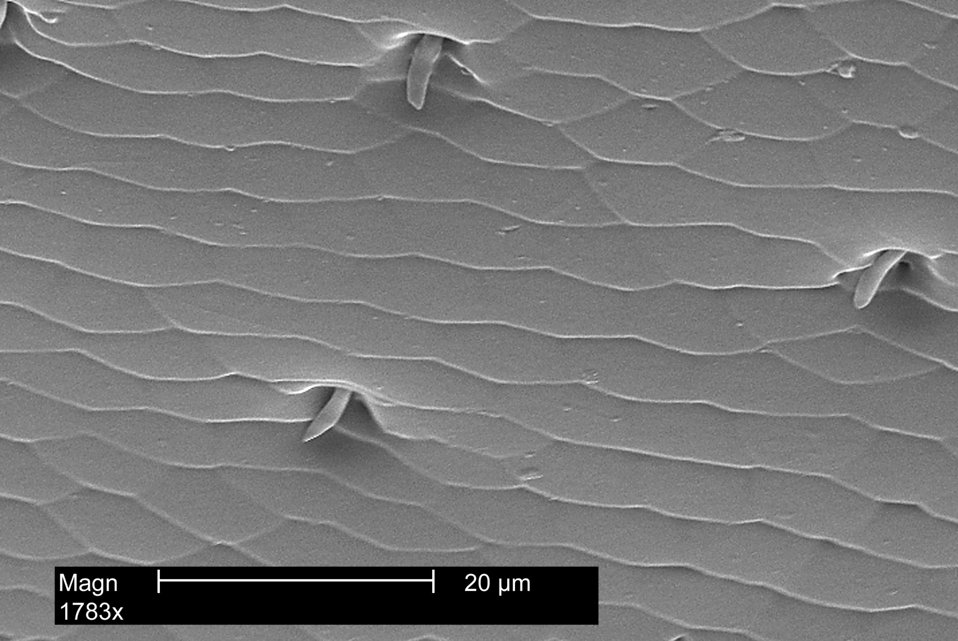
An electron micrograph of the chitinous shell covering the back of a ladybug magnified 1783x.